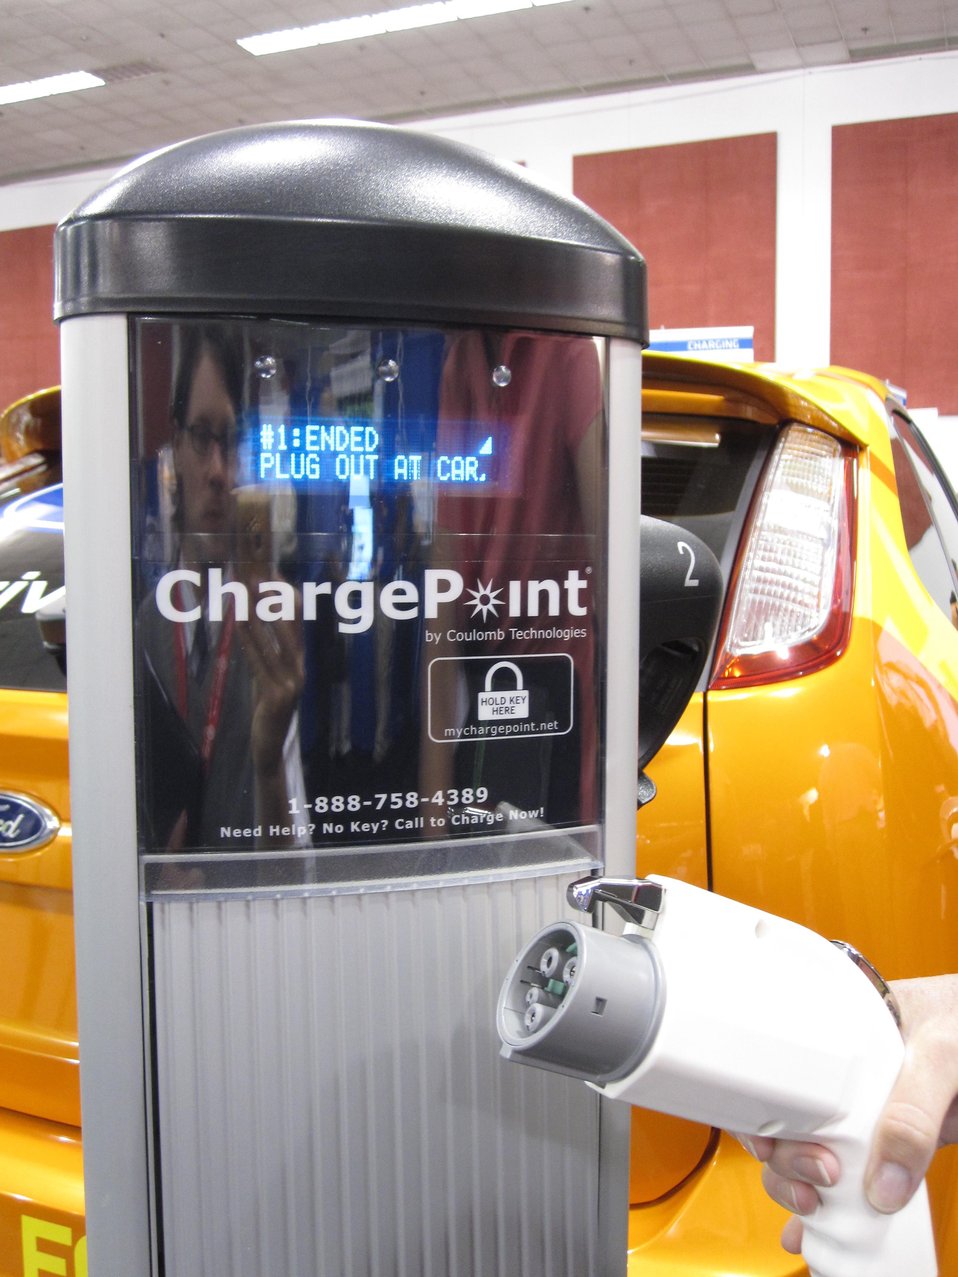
ChargePoint electric vehicle charger on display at Plug-In San Jose, California.